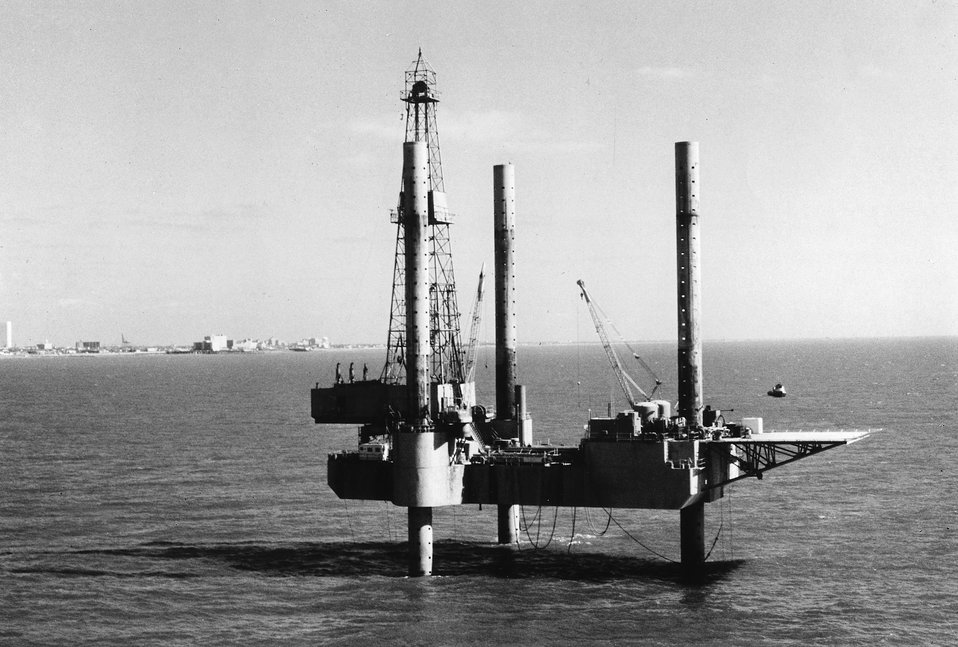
A drilling rig probes for oil and gas 1 1/2 miles off the coast of Galveston, Texas. c. undated